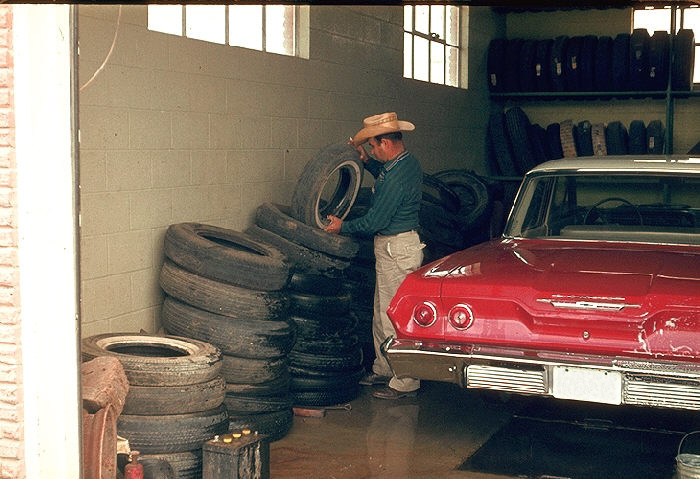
Tires, mosquito breeding site, Texas.